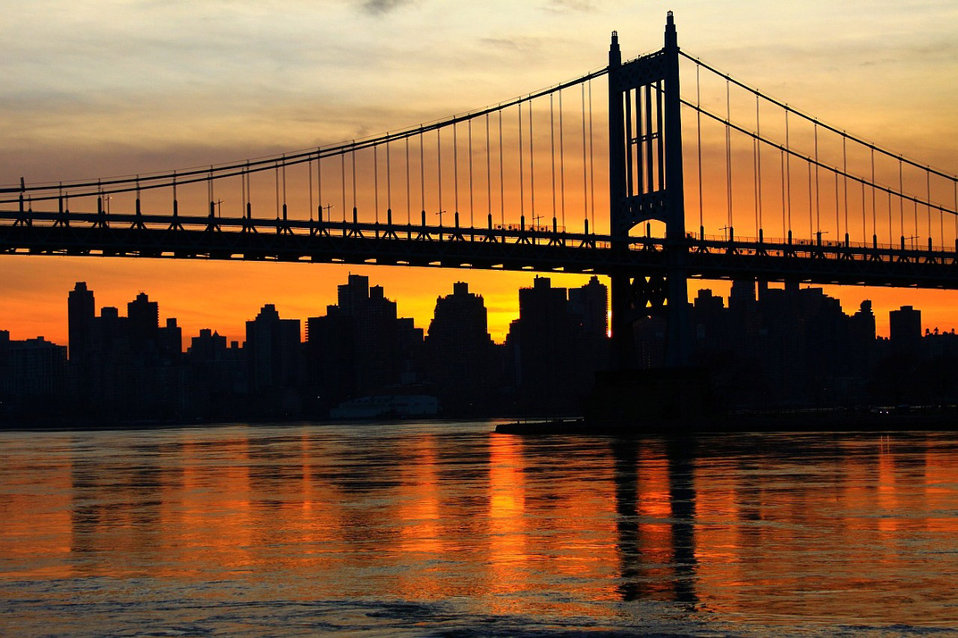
Sunset colors

Sunset over the city.